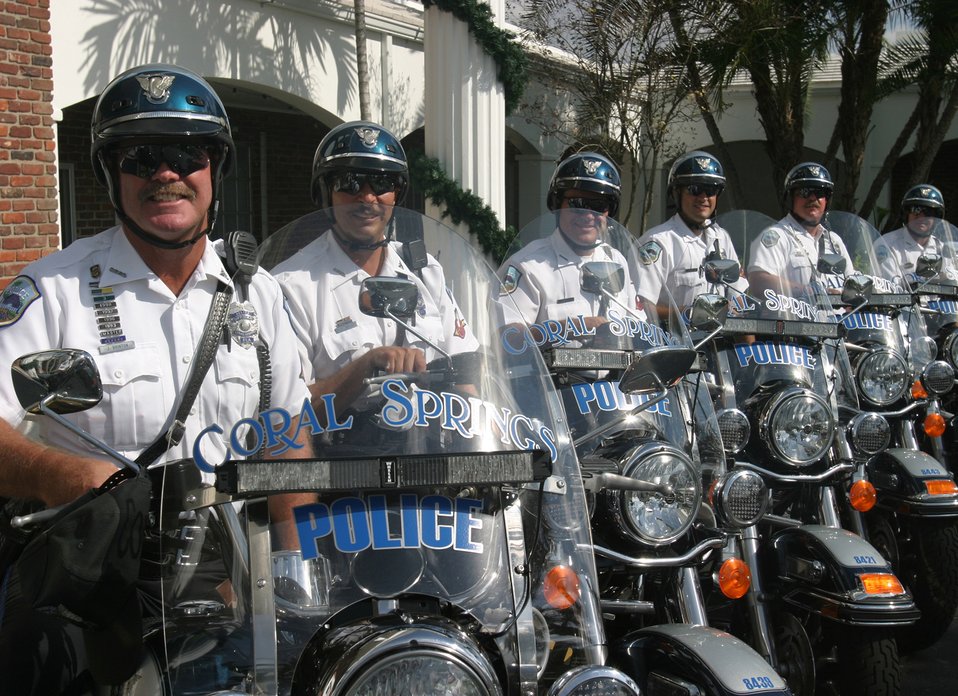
2007 Baldrige Award, The City of Coral Springs

2007 Malcolm Baldrige National Quality Award, Nonprofit, Recipient Profile